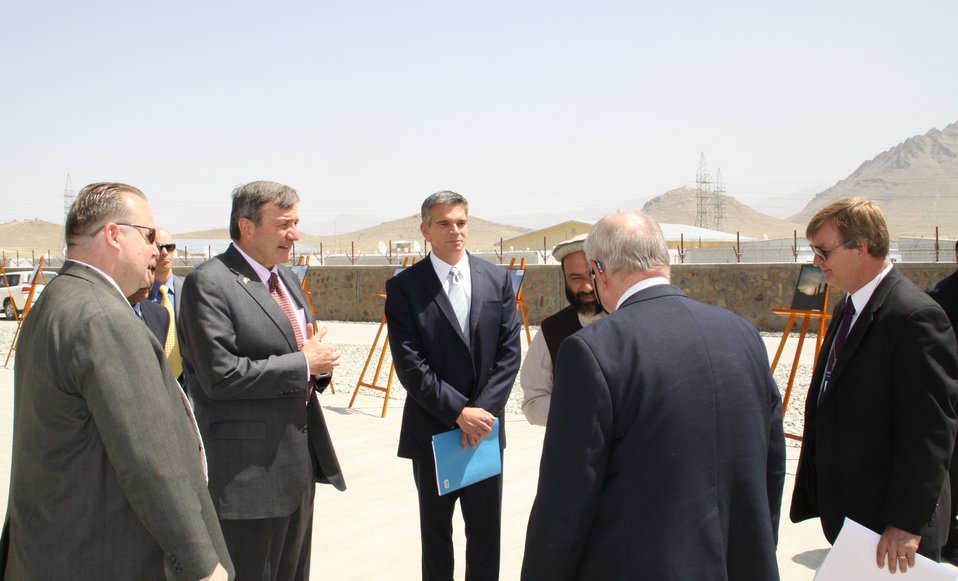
105 MW Tarakhil Power Plant Handover